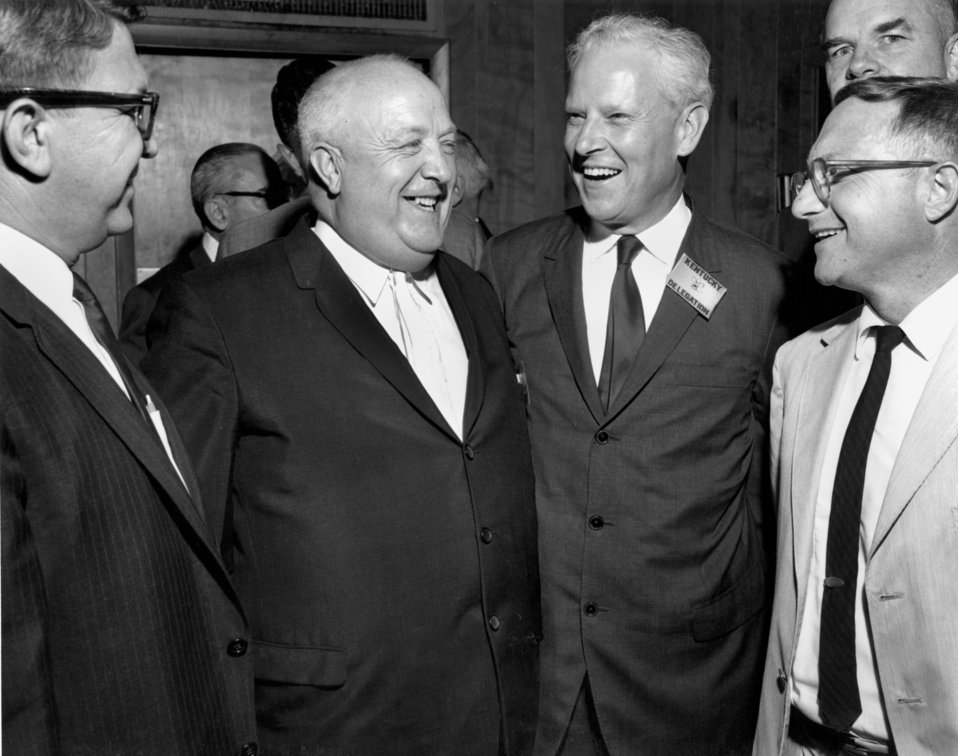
Sen. Albert Gore , Sr. SINB Confer. Oak Ridge

65-534 DOE photo Ed Westcott 8-18-1965 Holiday Inn Oak Ridge Tennessee